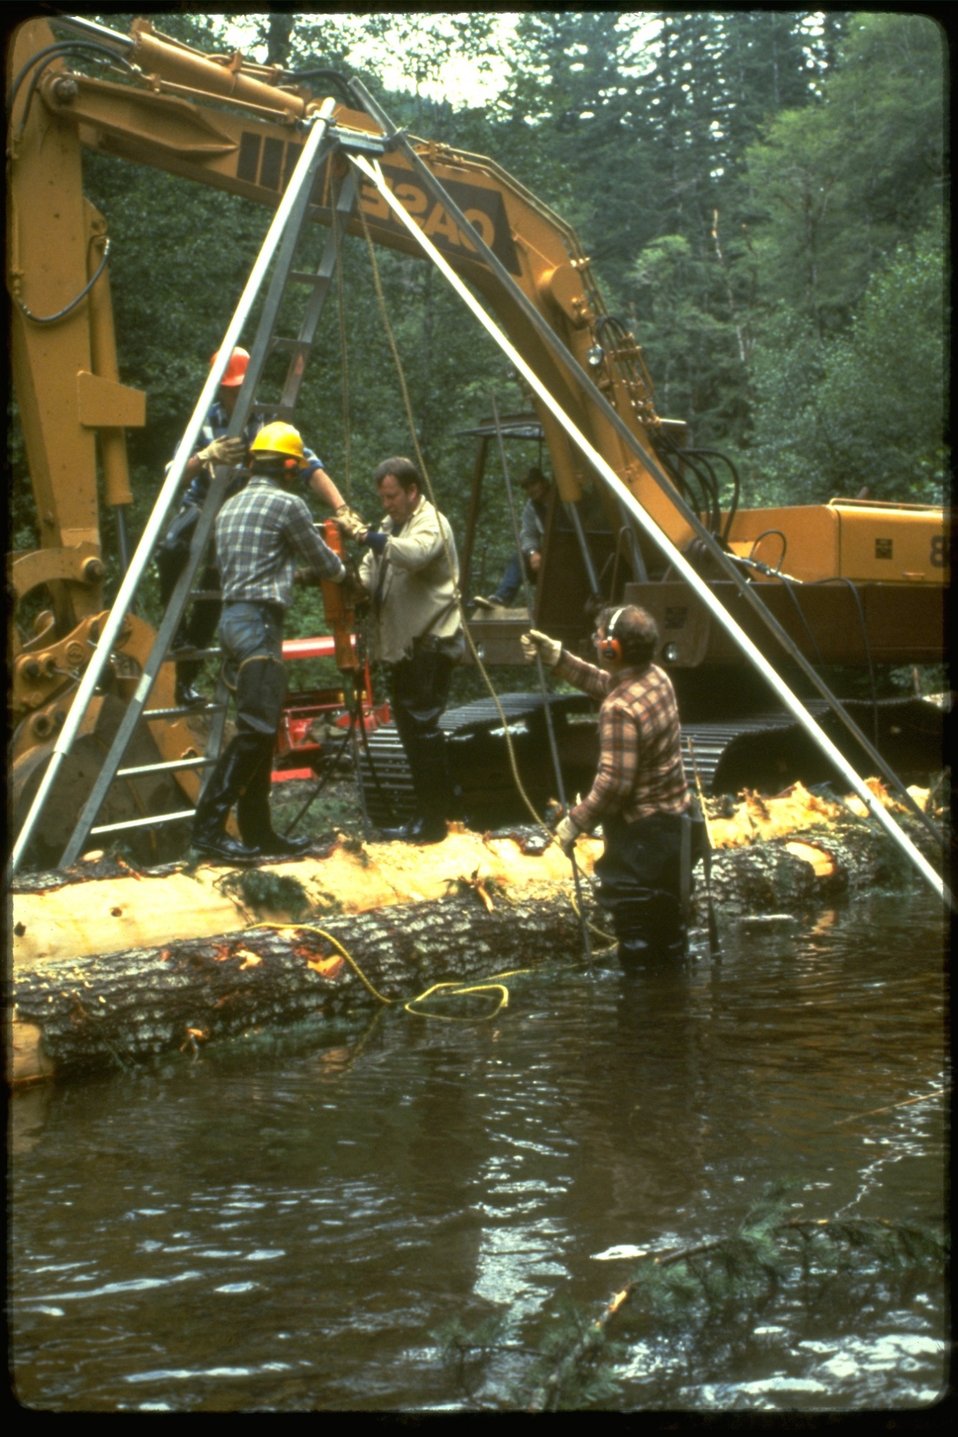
Putting in Stream Structures in the Nestucca River.